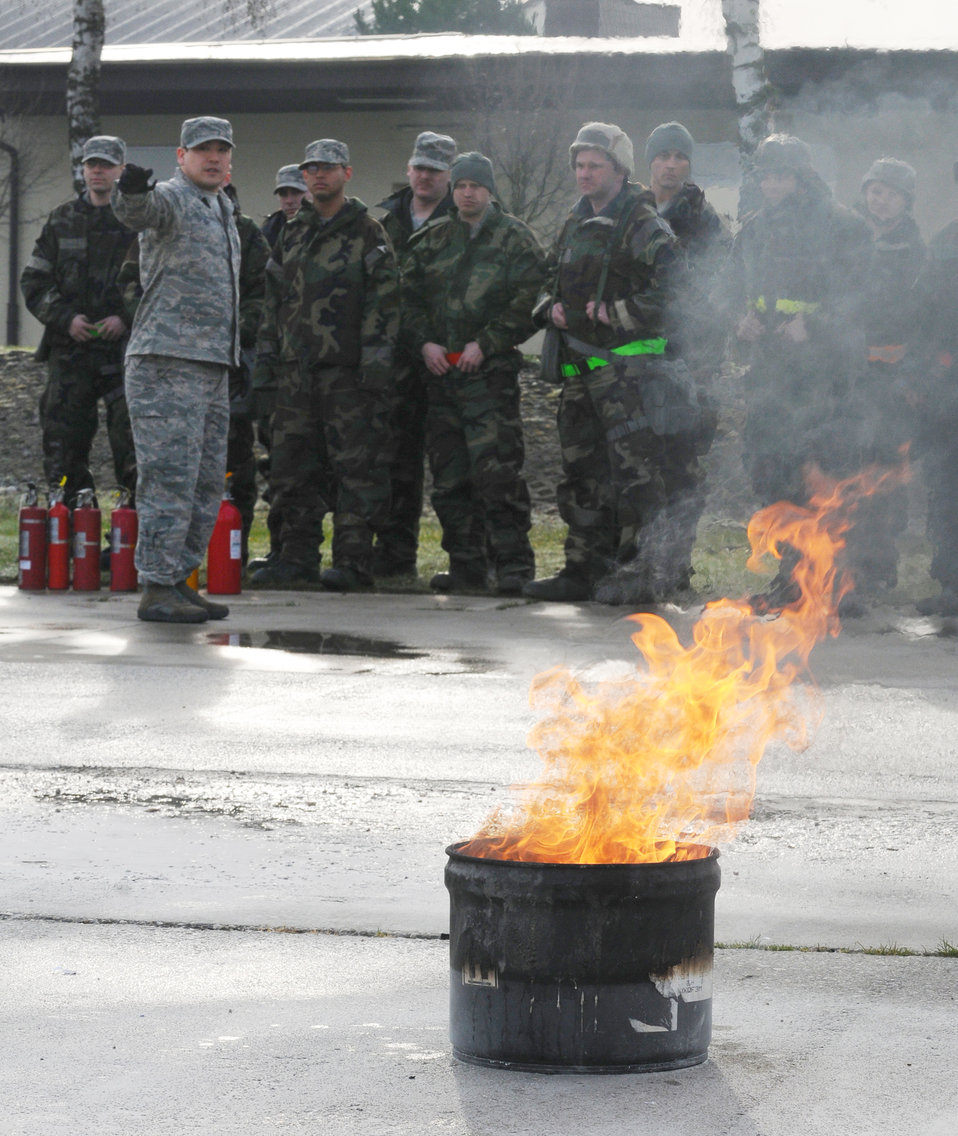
Spangdahlem Airmen train for evaluation

Staff Sgt. Gary Day explains the various classes of fire to students during individual core competency skills training April 2, 2010, Spangdahlem Air Base, Germany. The training reviewed various items to prepare active participants in the NATO Force Evaluation this summer. Sergeant Day is a firefighter with the 52nd Civil Engineer Squadron,